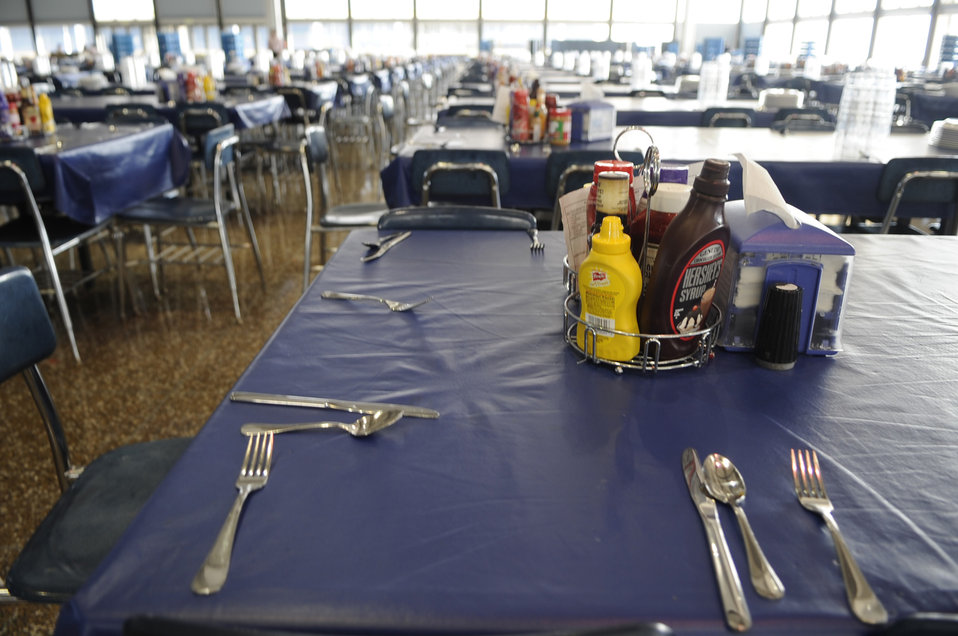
U.S.Air Force Academy Mitchell Hall Cadet Dining Facility

Tables are being set up for lunch Jan. 23 at Mitchell Hall Cadet Dining Facility at the U.S. Air Force Academy in Colorado Springs, Colo. The dining facility feeds approximately 4450 cadets and sits on 1.75 acres.